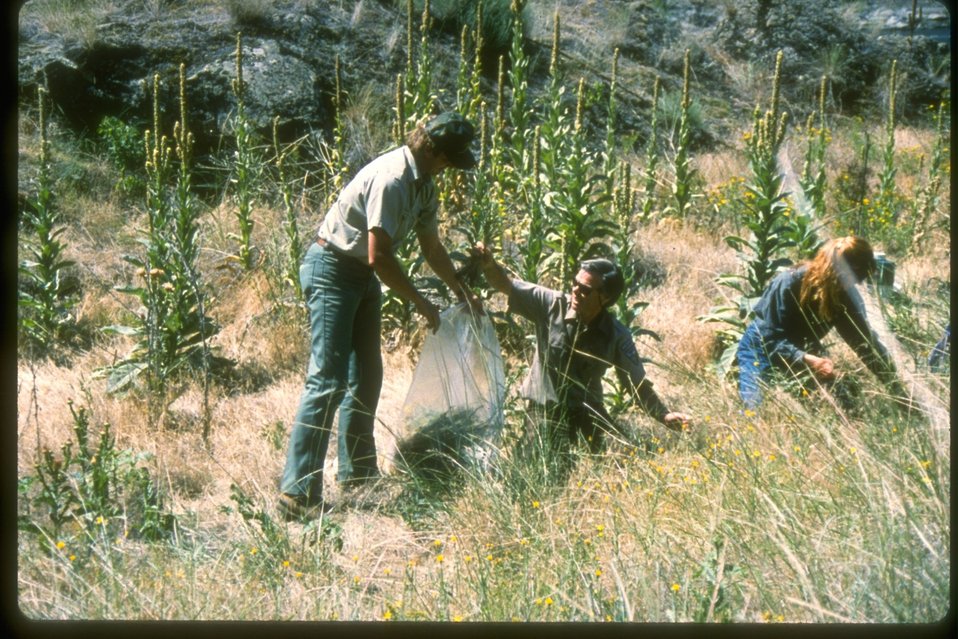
Mullin, Asher, Burton, and Hill (BLM, Forest Service, and Nature Conservancy) pulling yellow Starthistle.